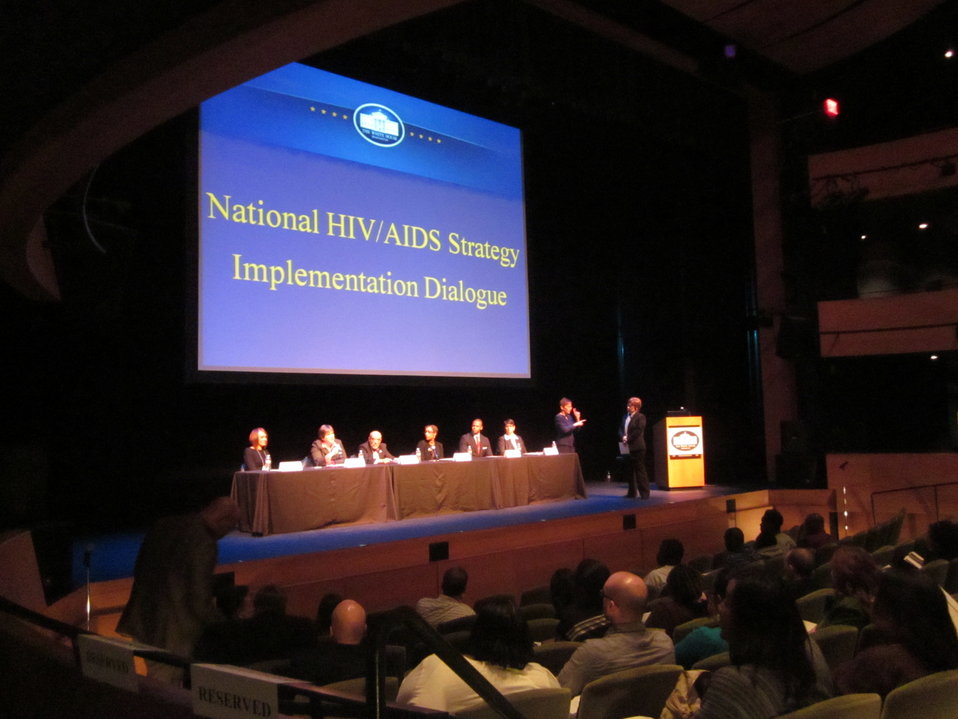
Baton Rouge Pics 049